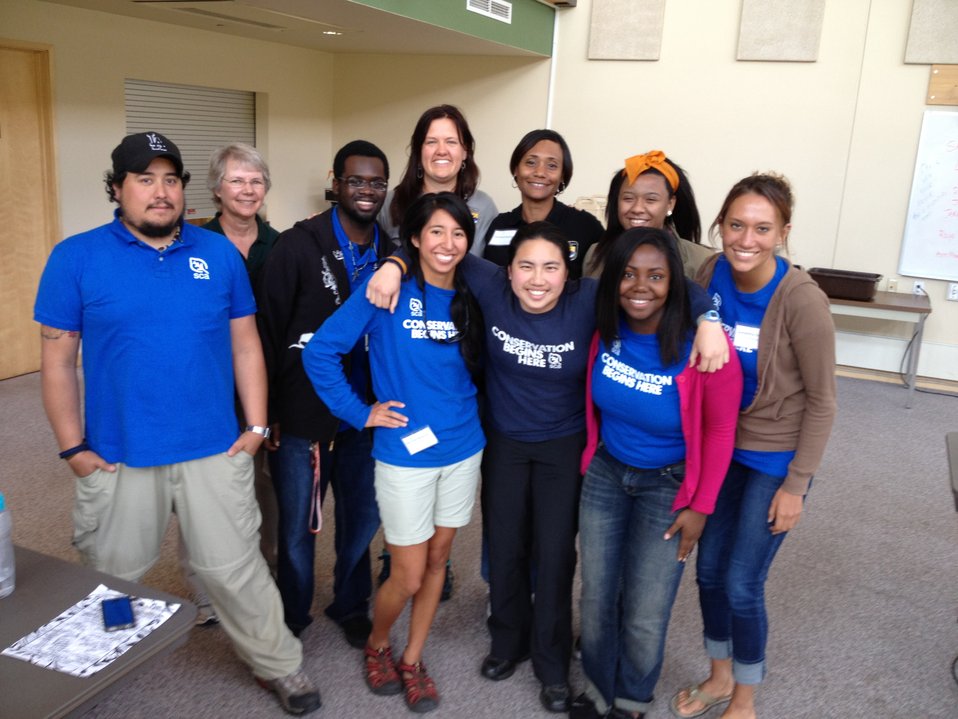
2012-Alaska Region-Work(02)

Alaska Career Discovery Program in Partnership with the Student Conservation Association